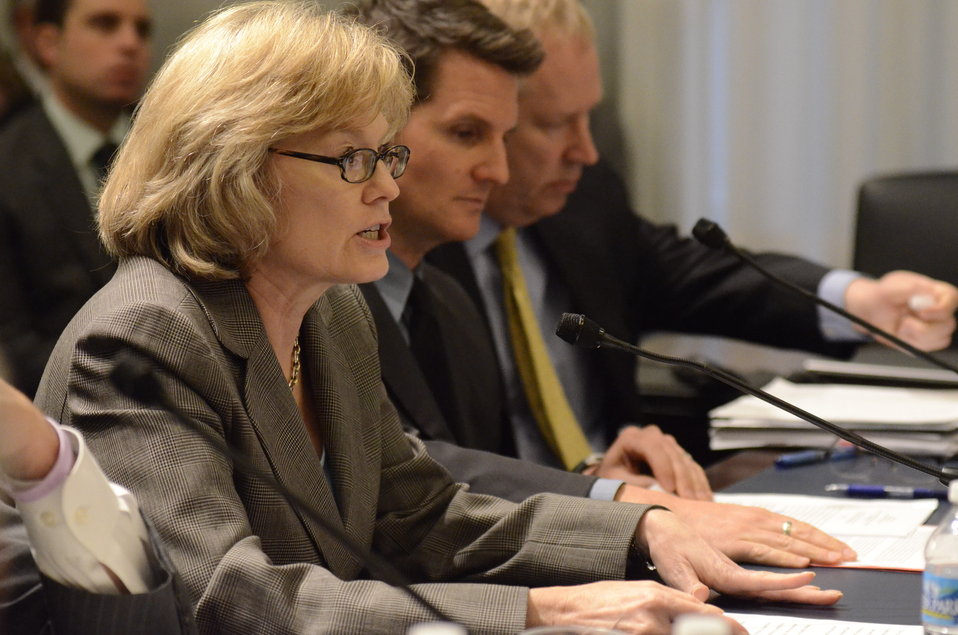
President and Chief Executive Officer, American Forest and Paper Association Donna Harman testifies on Retailers & Entertainers Lacey Implementation & Enforcement Fairness Act & Freedom from Over-Criminalization & Unjust Seizures Act at the Longworth House Office Building in Washington, D.C. on Tuesday, May 8, 2012.